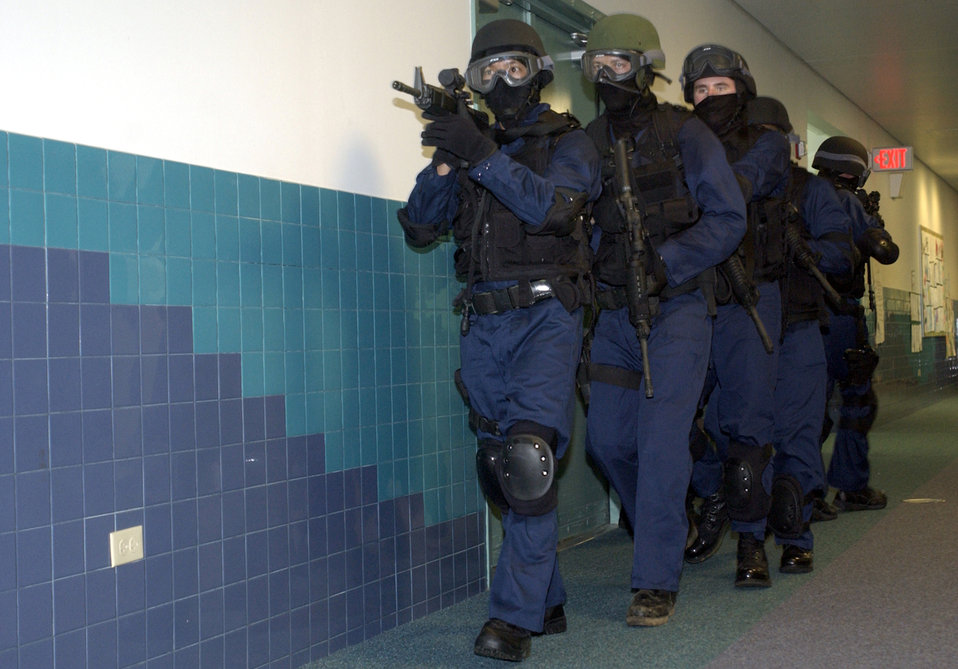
Hostage negotiation exercise

During a hostage negotiation exercise, the 36th Security Forces Squadron's High Intensity Tactical Team prepares to breech a classroom where an upset parent has taken four students and a teacher captive Wednesday, Feb. 22, 2006, at Anderson Air Force Base, Guam.